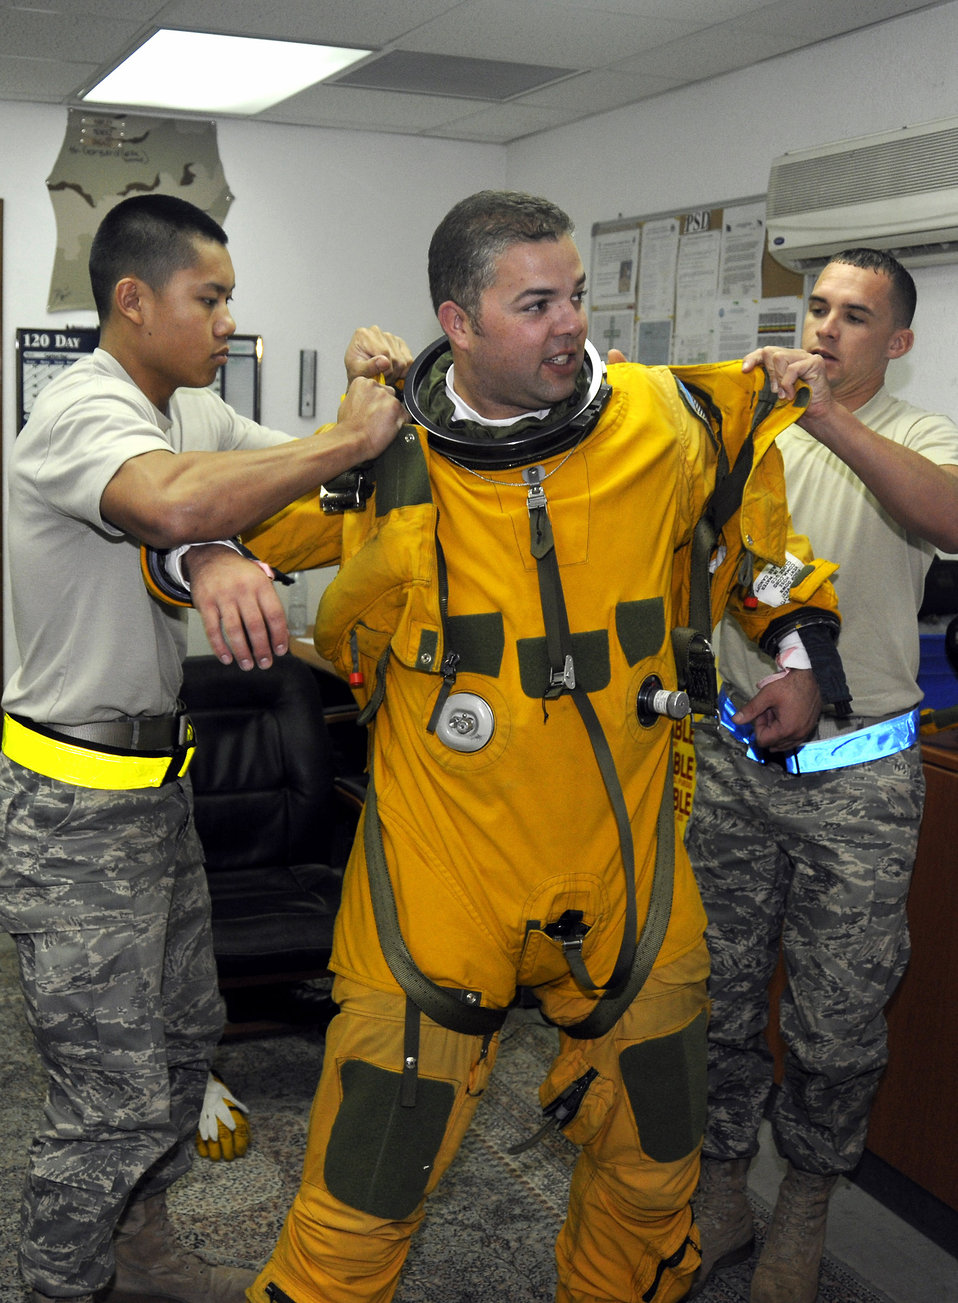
Suiting up for success in the desert

Lt. Col. Brian Dickinson gets help from Senior Airman David Sivixay(left) and Senior Airman Allen Smith putting on a full-pressure suit Nov. 14. Both are with the 99th Expeditionary Reconnaissance Squadron physiological support division at an air base in Southwest Asia. Colonel Dickinson is a U-2 Dragonlady pilot with the 99th ERS and is responsible for gathering intelligence in the area of responsibility in support of operations Iraqi and Enduring Freedom.